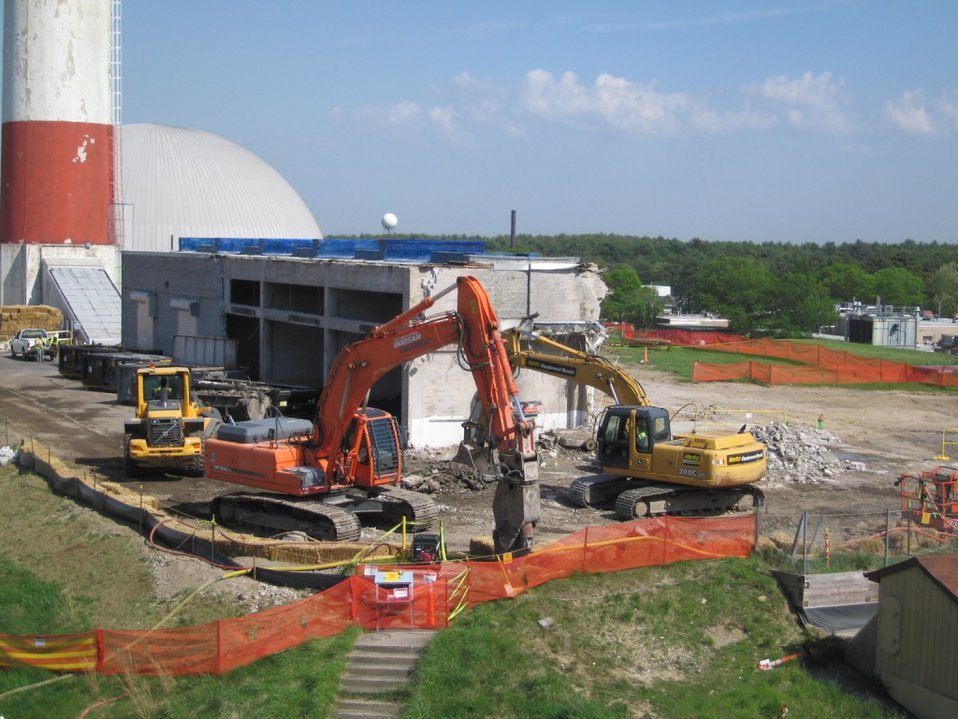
Fan House Demolition